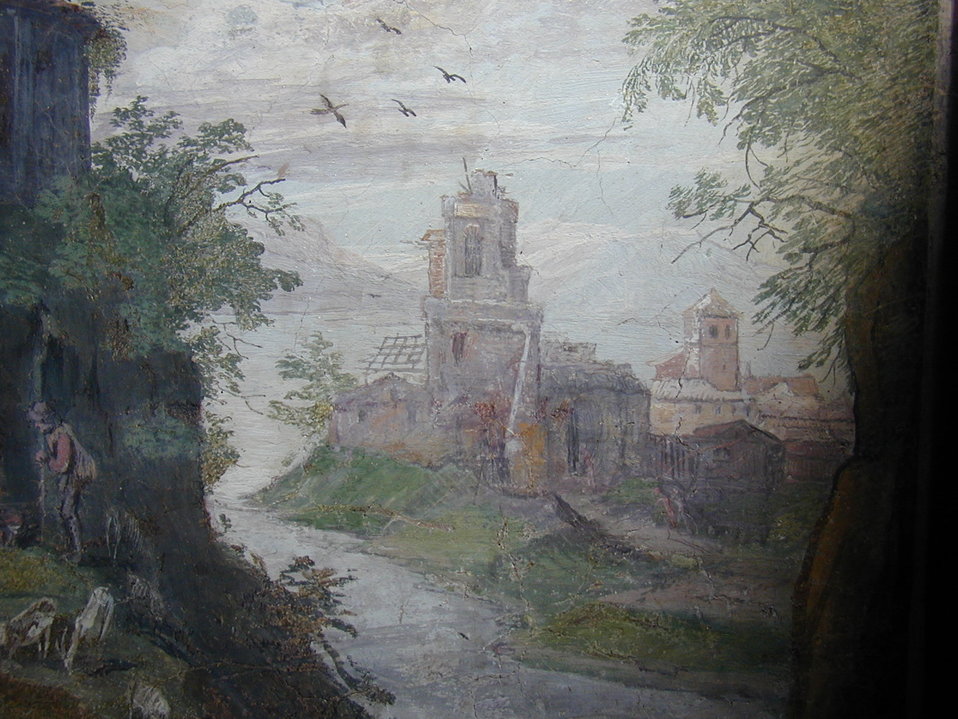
03 000910 tivoli v d este 04 affreschi